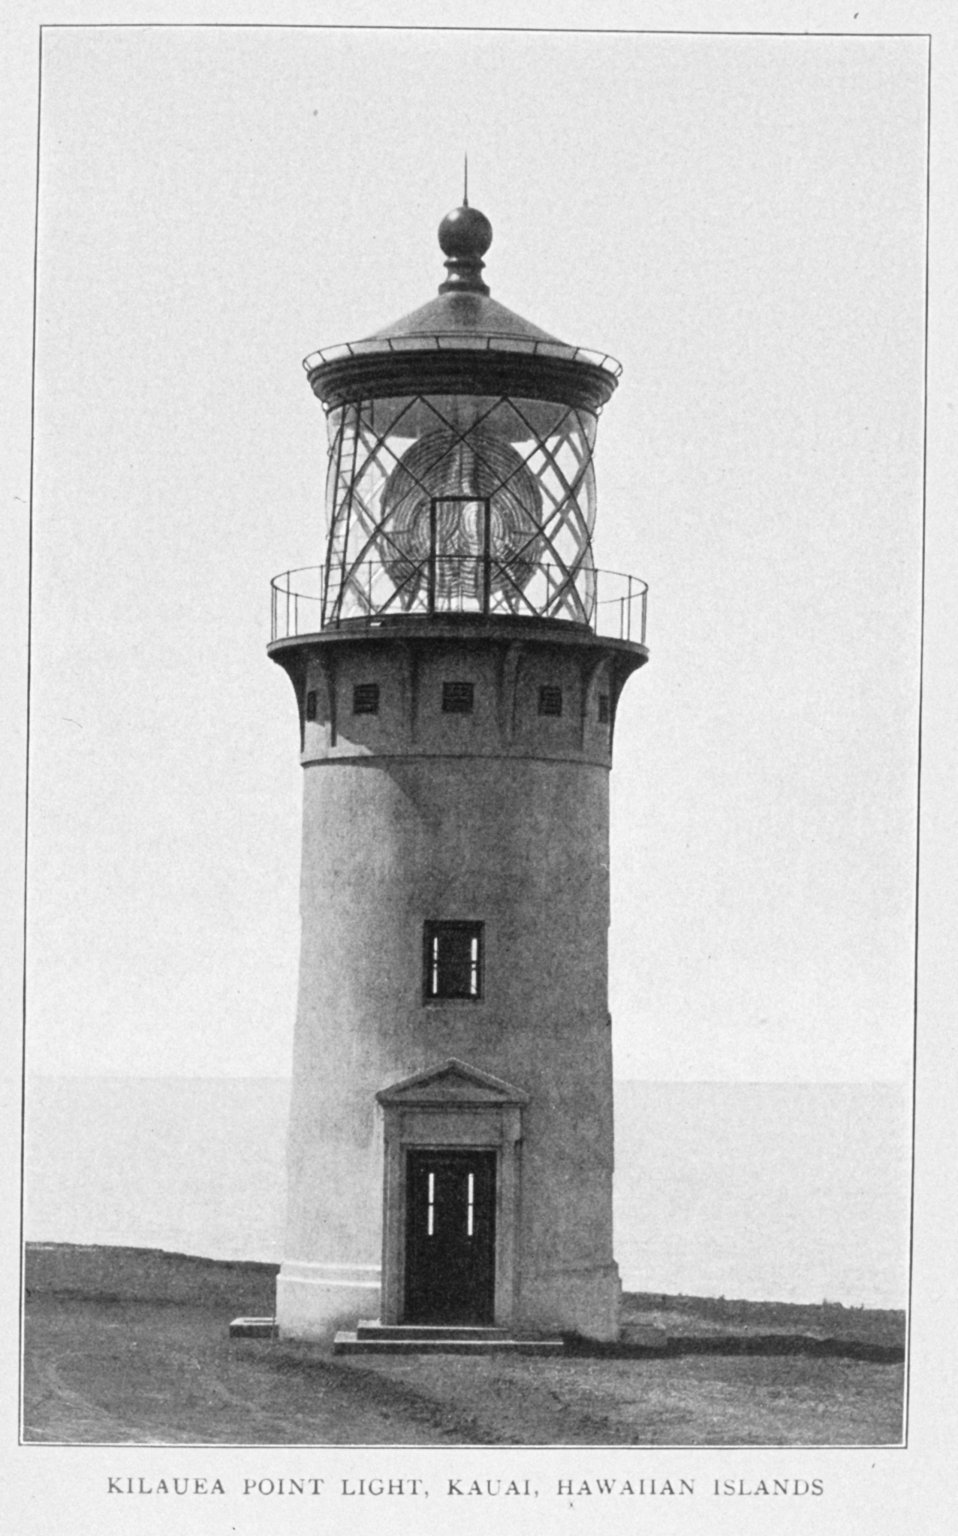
Kilauea Point Light, Kauai, Hawaiian Islands. In: 'Lighthouses and Lightships of the United States' by George R. Putnam, p. 170, 1917. Houghton Mifflin and Company, Boston.Library Call No. 527.7 P98.